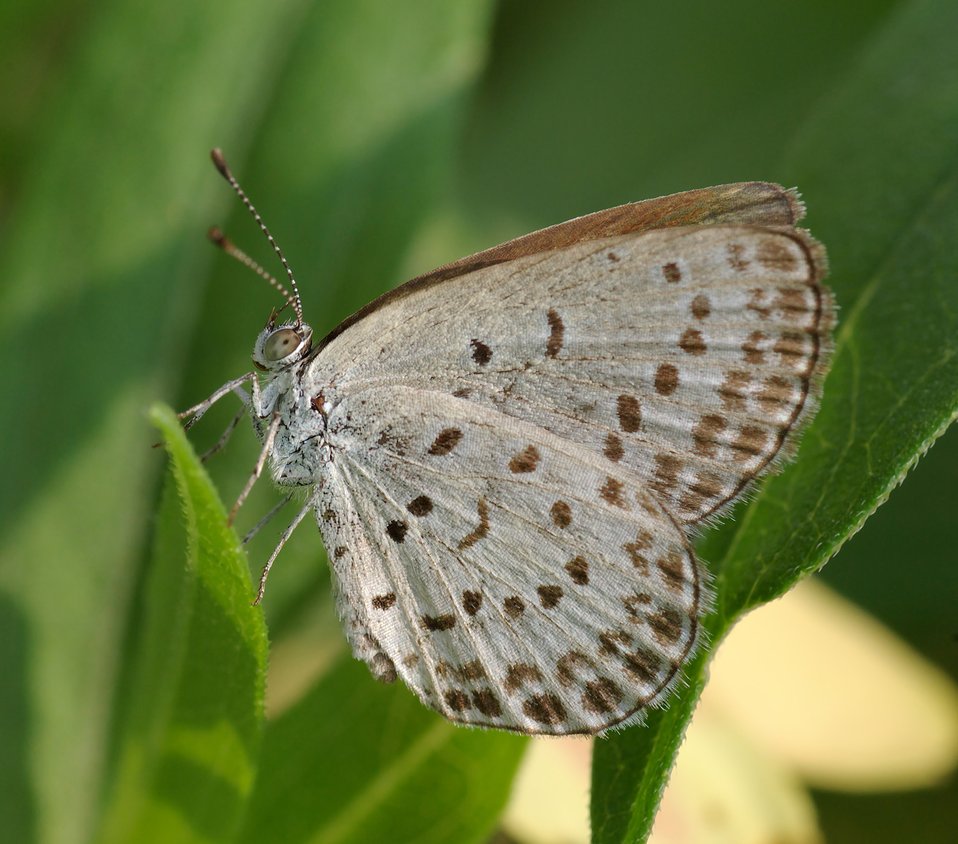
Name Pseudozizeeria maha Family Lycaenidae Pale Grass Blue. 日本語: ヤマトシジミ
Location: Osaka, Japan
Camera Details:
Camera: PENTAX K10D
Lens: TAMRON SP AF90mm F/2.8 Di (Model272E)